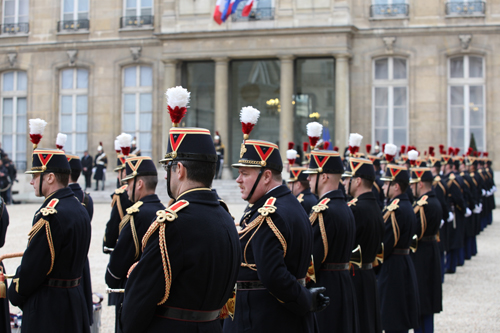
French soldiers stand at attention outside the Elysee Palace in Paris, France, on March 19, 2011.